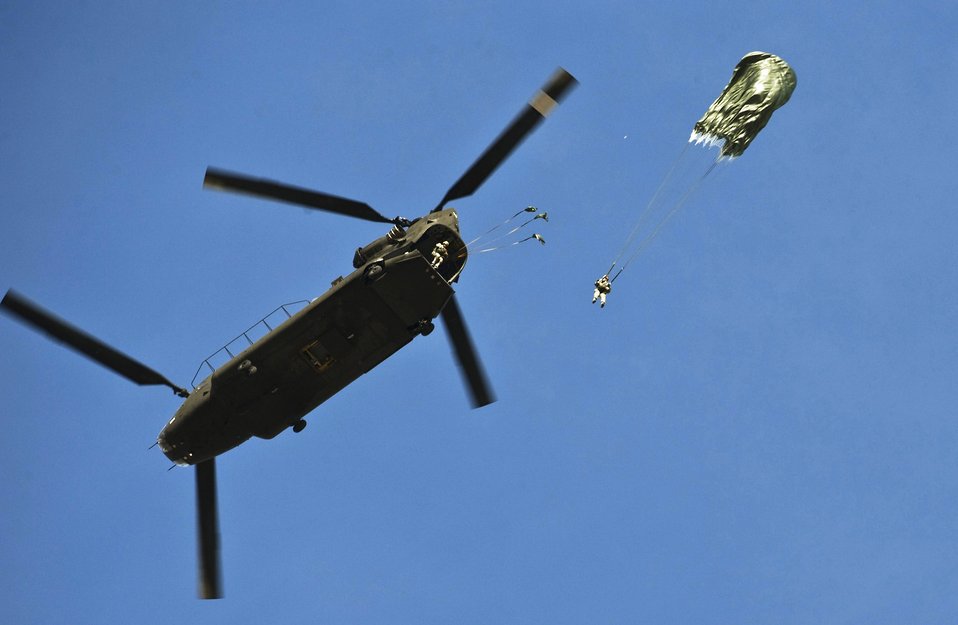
It's a long way down

Airmen assigned to the 820th RED HORSE Squadron perform a static line jump from a CH-47 Chinook helicopter April 15, 2011, above Nellis Air Force Base, Nev.